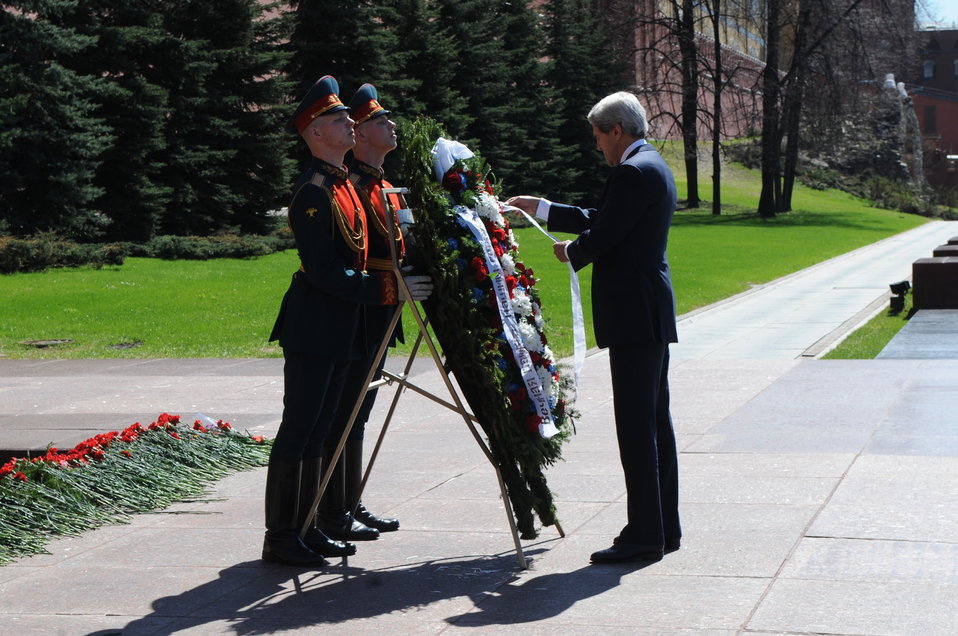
Secretary Kerry Lays a Wreath in Moscow

U.S. Secretary of State John Kerry adjusts the ribbon of the wreath he presented at the Tomb of the Unknown Soldier before observing a moment of silence near the Kremlin in Moscow, Russia, on May 7, 2013.